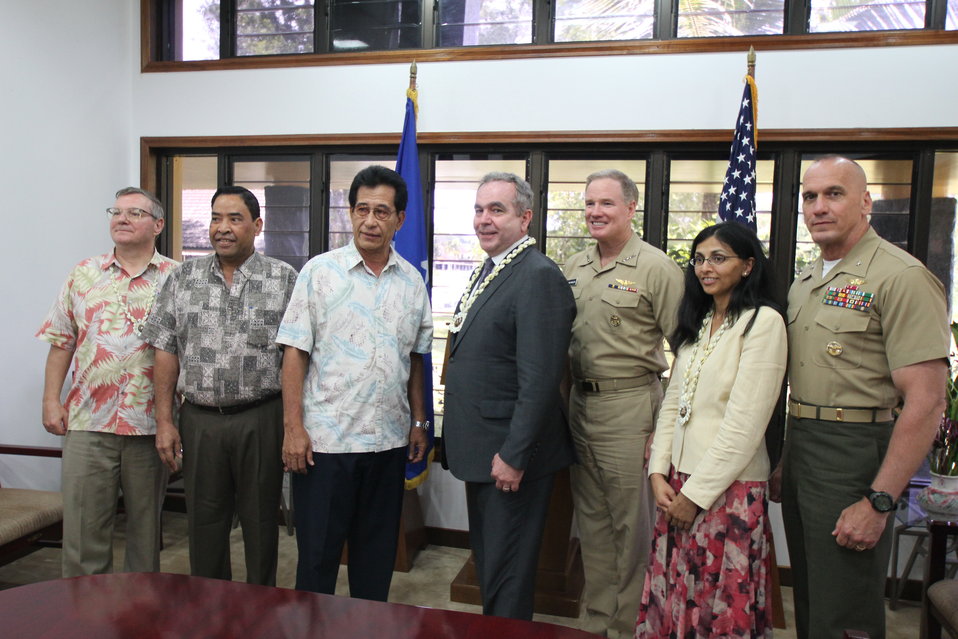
Assistant Secretary Campbell Meets With Federated States of Micronesia President Mori and His Executive Cabinet

Assistant Secretary of State for East Asian and Pacific Affairs Kurt Campbell, right center, meets with Federated States of Micronesia President Emanuel 'Manny' Mori, left center, and his Executive Cabinet in Palikir, Pohnpei, on July 1, 2011. Assistant Secretary Campbell is leading an inter-agency Pacific Island tour to enhance bilateral political, economic, and security relations in the region. The U.S. Delegation includes: Pacific Fleet Commander Admiral Patrick Walsh, Office of the Secretary of Defense South/Southeast Asia Principal Director Brigadier General Richard Simcock, and U.S. Agency for International Development (USAID) Assistant Administrator for Asia Nisha Biswal.